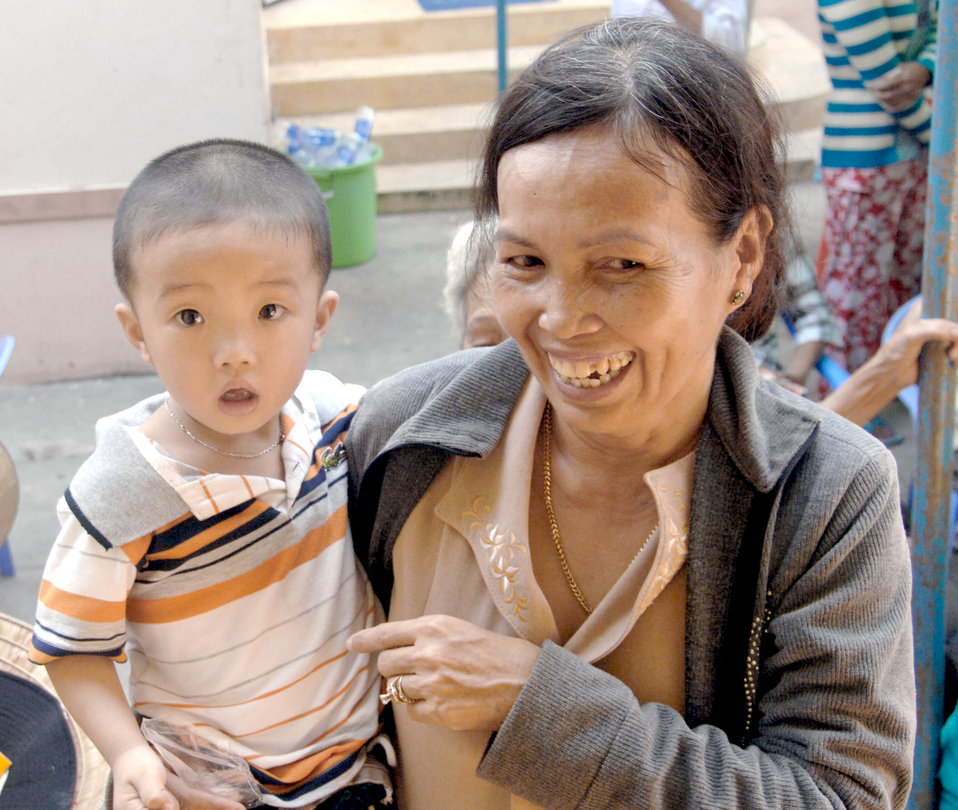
Pacific Angel 2010

A Vietnamese mother and child wait to receive prescription medicine from the Truong Thanh medical clinic May 14, 2010, as part of Operation Pacific Angel 2010. Operation Pacific Angel is a joint and combined humanitarian assistance operation conducted in the Pacific area of responsibility to support the members of the U.S. Pacific Command's capacity-building efforts.